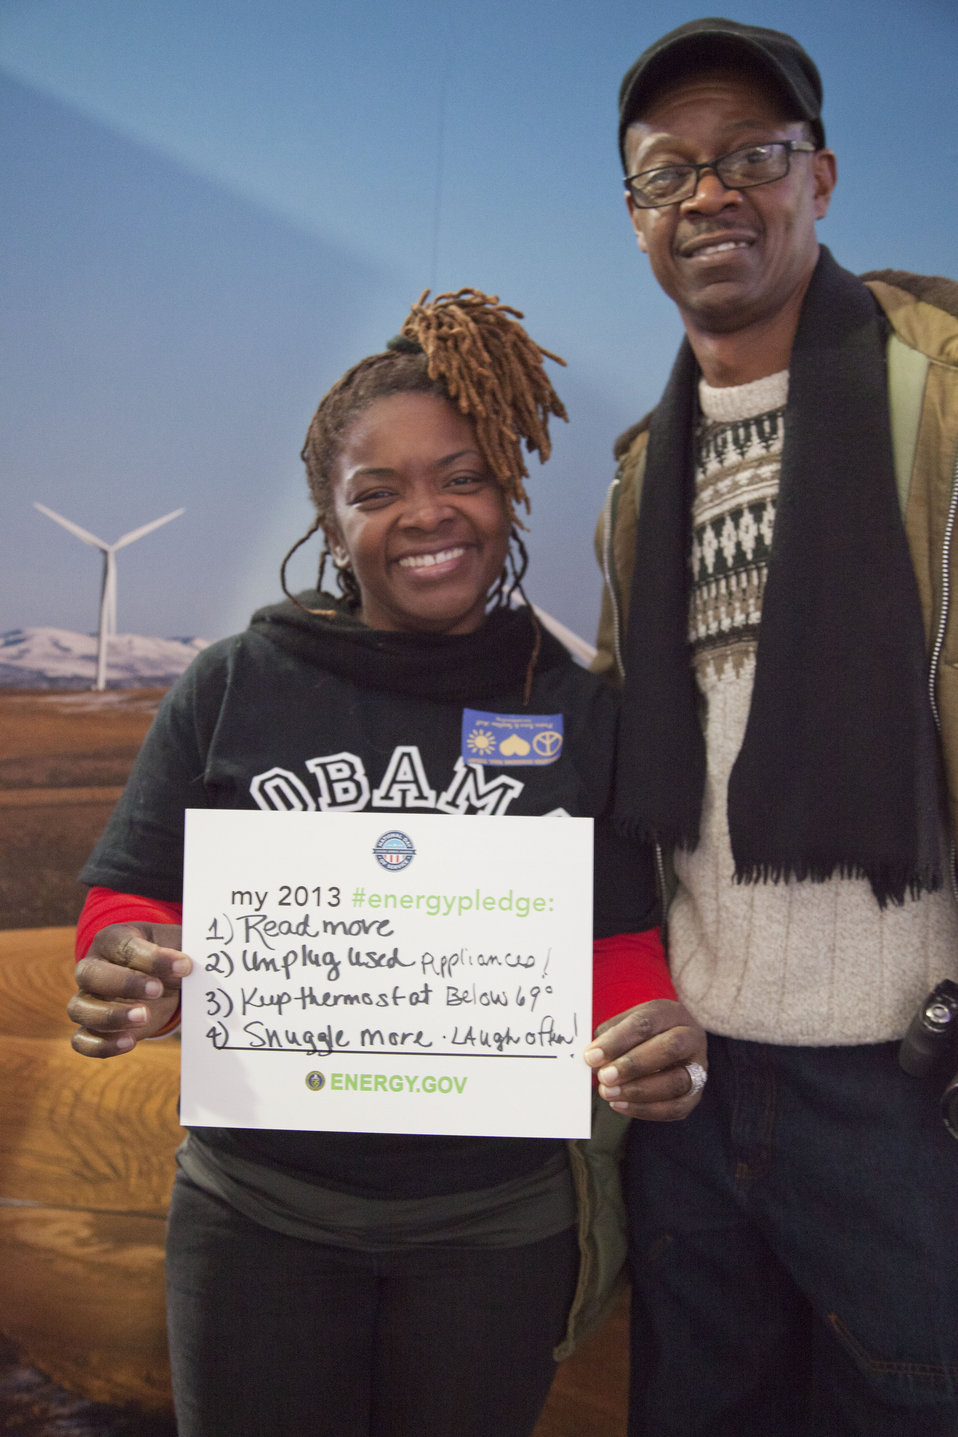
What's your #energypledge?